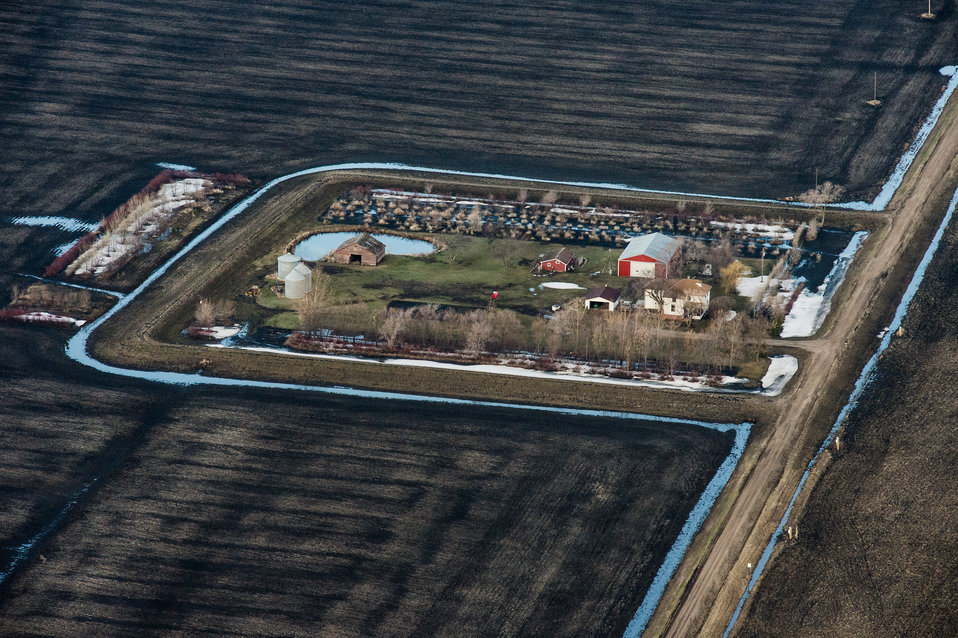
William Lisberg used the U.S. Department of Agriculture (USDA) Environmental Quality Incentives Program (EQIP) to receive an incentive payment to help in the cost of the earthen ring dike construction around his farmstead, in Cass County, ND, on Tuesday, April 30, 2013. A week ago, the farmstead was covered in snow. Now thawed, the water fills the drainages. For information about this and other programs from the USDA the Natural Resources Conservation Service (NRCS) Red River Basin Initiative (RRBI) please see www.mn.nrcs.usda.gov/news/features13/RRBI.html.